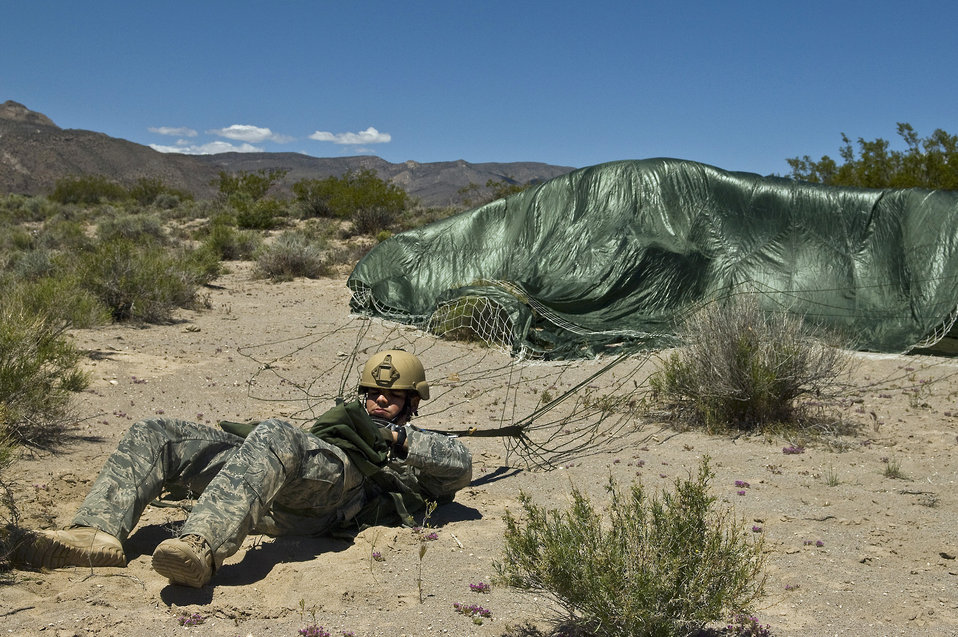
RED HORSE airborne flight

Tech. Sgt. Philip McAlpin recovers after landing from an air jump May 12, 2011, near Alamo, Nev. Sergeant McAlpin is an equipment operator craftsman assigned to the 820th RED HORSE Squadron.